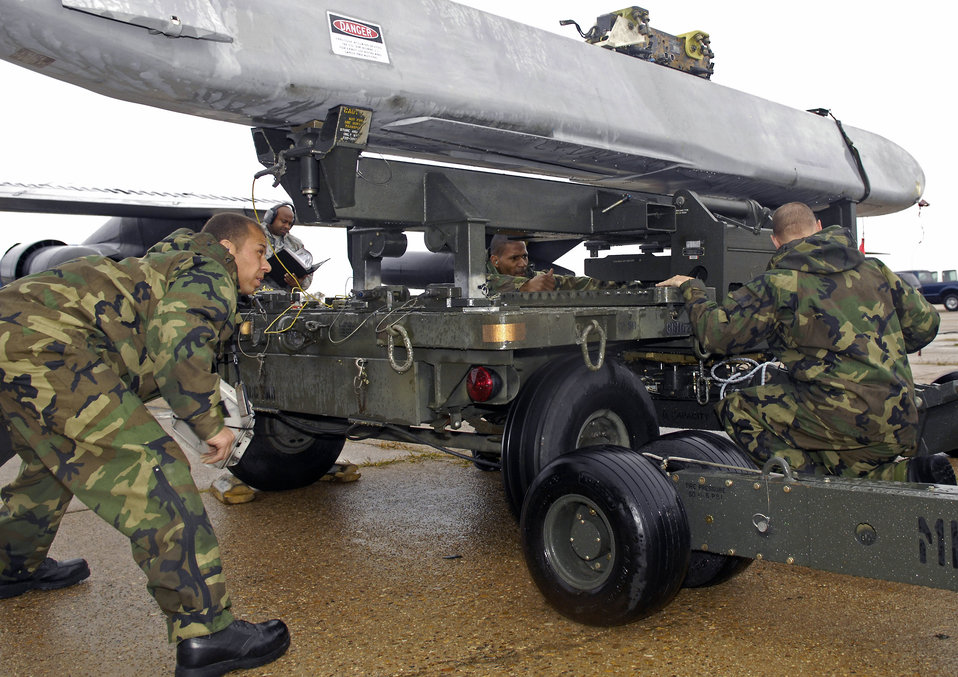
Re-invigorating nuclear enterprise a top priority

A 2nd Maintenance Squadron weapons load team is evaluated during a portion of the Air Combat Command Nuclear Surety Inspection at Barksdale Air Force Base, La., Nov.12. Base officials welcomed members of the ACC Inspector General team Nov. 9 to focus on three major graded areas throughout the inspection: Nuclear surety program management and administration, the personnel reliability program and logistics movement.